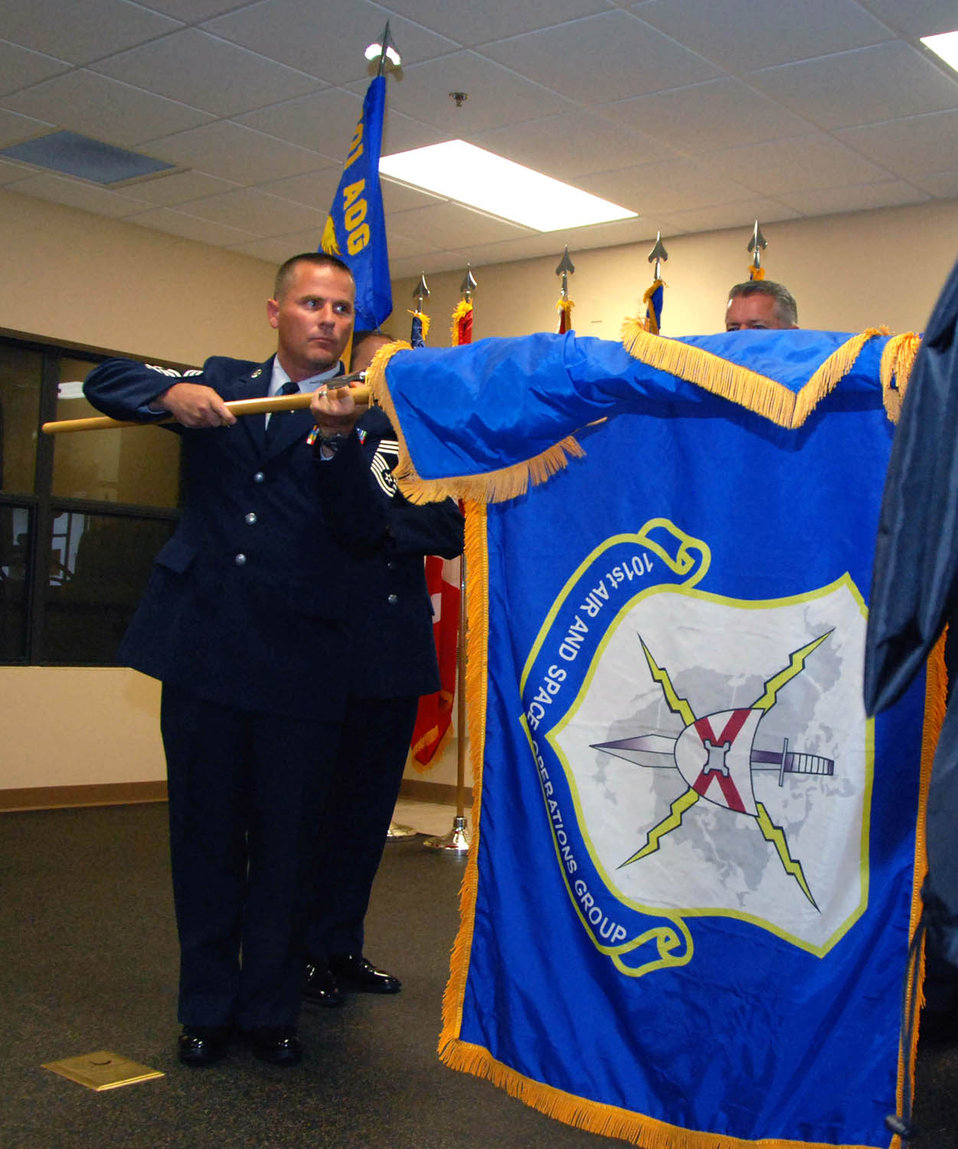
101st Air and Space Operations Group activation

Chief Master Sgt. Lynn Boop, the 101st Air and Space Operations Group chief enlisted manager, unfurls the unit’s organizational flag Aug. 21, 2010, during a ceremony at Tyndall Air Force Base, Fla., to commemorate the activation of the 101st AOC.